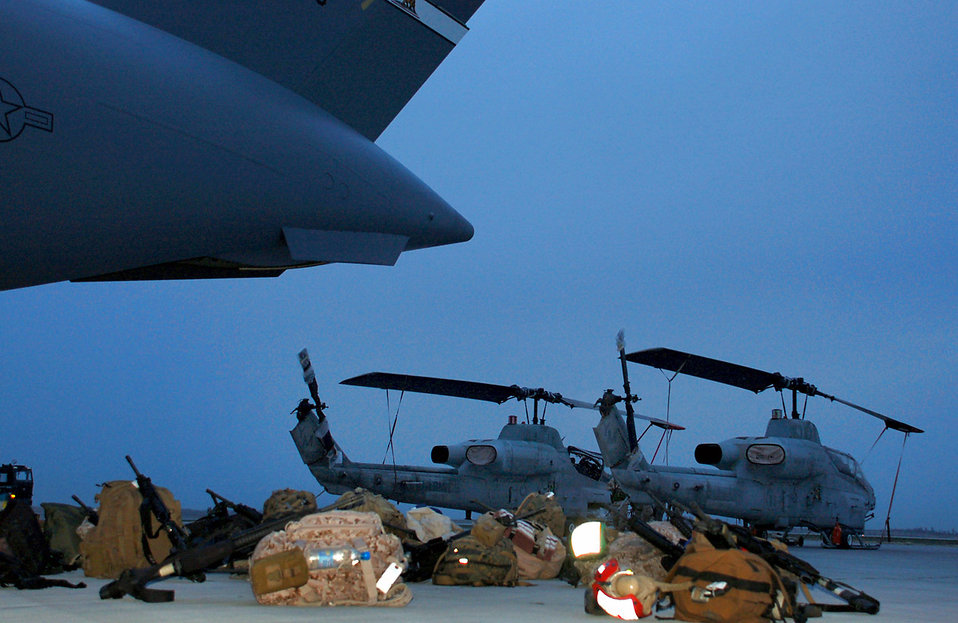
Marines move through Manas Air Base

Marines with the 24th Marine Expeditionary Unit load three AH-1W Super Cobra helicopters onto an Air Force C-17 Globemaster III March 16 at Manas Air Base, Kyrgyzstan. The Marines are headed downrange to Afghanistan as part of the troop plus-up authorized by the president in January. The Marines will be a part of the NATO-International Security Assistance Force, conducting operations to extend the authority of the Government of the Islamic Republic of Afghanistan.